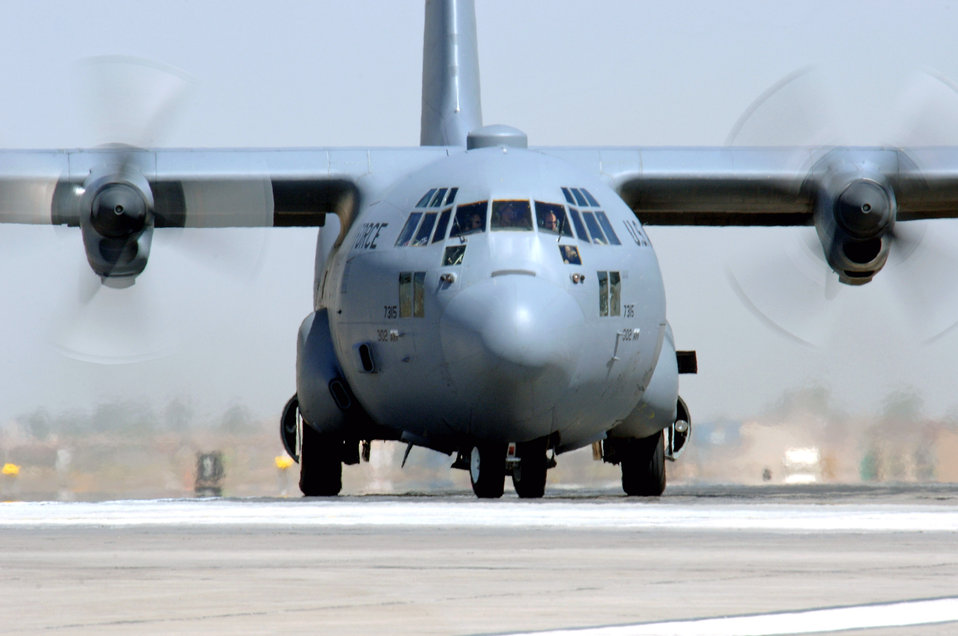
Nov. 3 airpower summary: C-130s sustain global airlift

A C-130 Hercules taxis in after an Operation Iraqi Freedom mission at Joint Base Balad, Iraq. The C-130s provide intra-theater heavy airlift, delivering tons of cargo and transporting passengers to include troop resupply in support of Operations Iraqi and Enduring Freedom.